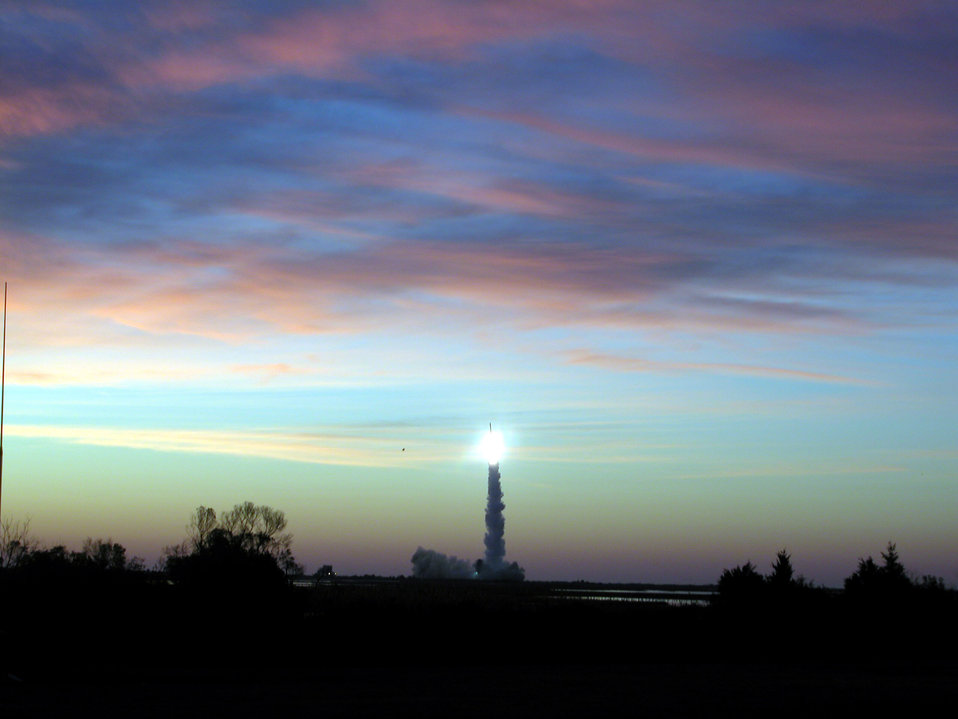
TacSat-2 launched into space with flawless liftoff

A Minotaur I rocket lifts off carrying the TacSat-2 micro satellite as well as NASA's GeneSat-1 spacecraft Dec. 16 from NASA's Wallops Island Flight Facility near Wallops Island, Va. Featuring approximately 11 onboard experiments, TacSat-2, administered by the Air Force Research Laboratory's Space Vehicles Directorate at Kirtland Air Force Base, N.M., serves as the forerunner for rapid, responsive satellite production, launch and operation.